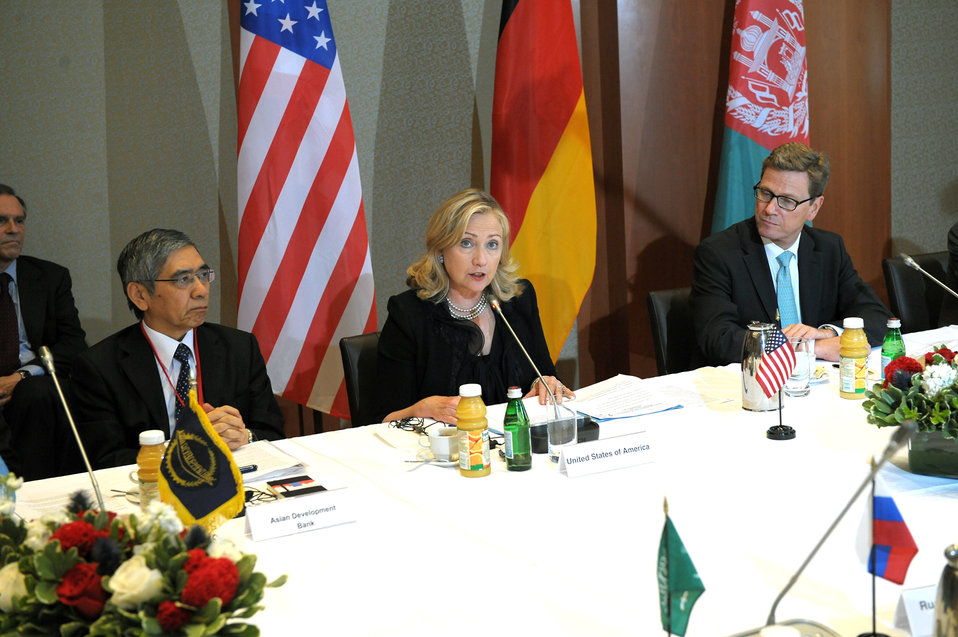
Secretary Clinton and Afghan Foreign Minister Rassoul Co-Chair the New Silk Road Ministerial Meeting

U.S. Secretary of State Hillary Rodham Clinton, center, and Afghan Foreign Minister Rassoul, left, co-chair the New Silk Road Ministerial Meeting hosted by German Foreign Minister Westerwelle, right, at the German House in New York, New York, on September 22, 2011.